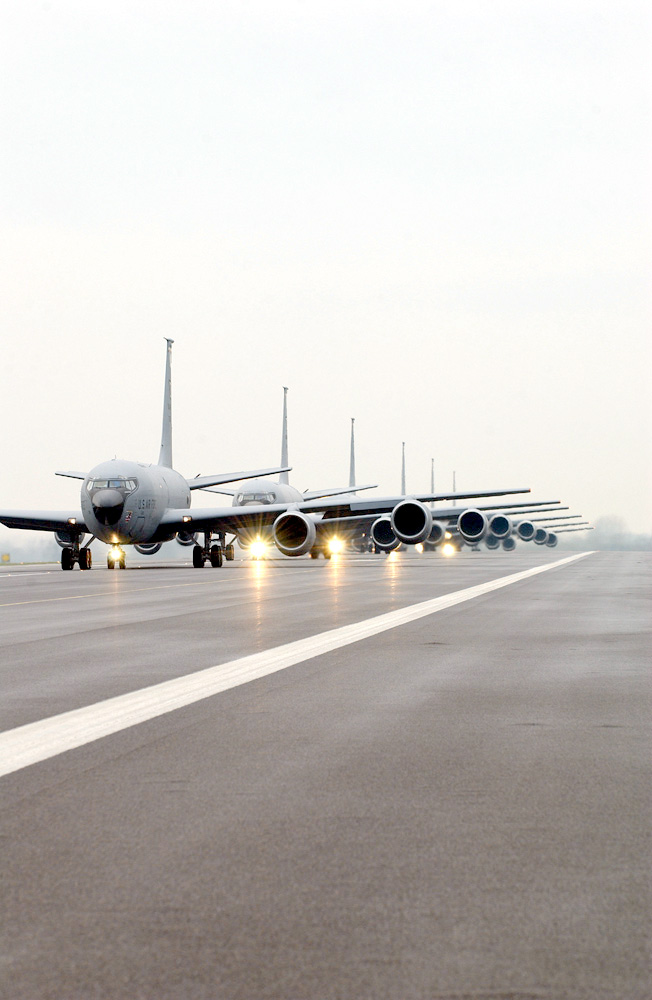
Follow the leader

ROYAL AIR FORCE MILDENHALL, England -- A six-ship KC-135 Stratotanker formation here demonstrates the 100th Air Refueling Wing's quick-response capability Jan. 23 as part of a training exercise. The 100th ARW maintains the only U.S. Air Force air-refueling assets based in Europe. Wing airmen are responsible for covering more than 20 million square miles and 93 countries in the European theater.